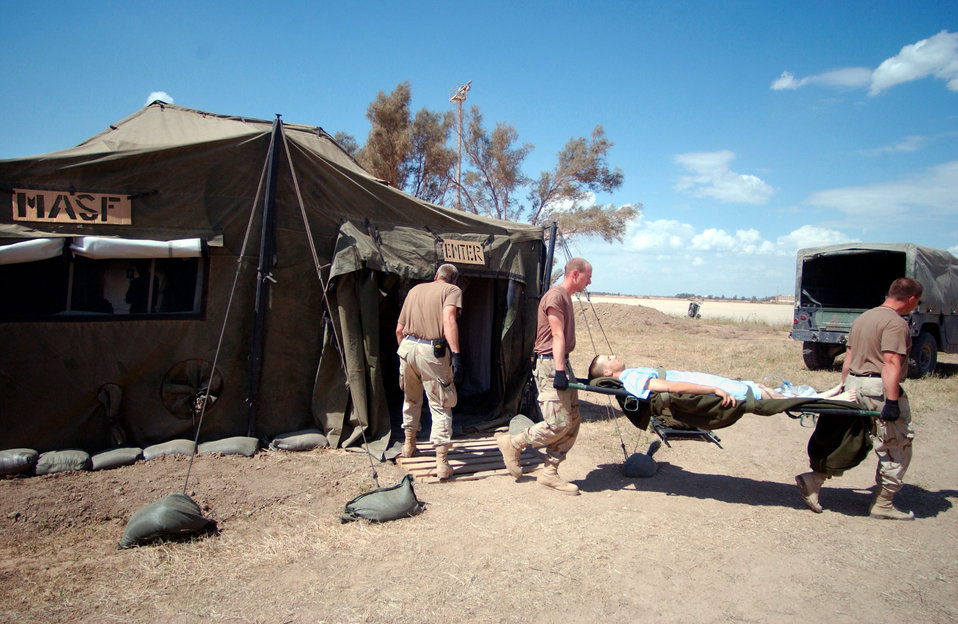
Medical evac

OPERATION IRAQI FREEDOM -- U.S. Air Force aeromedical-evacuation technicians carry a patient to a C-130 Hercules at Baghdad International Airport on April 22. The airport is a primary base of operations for U.S. troops, cargo and humanitarian airlift in Iraq.